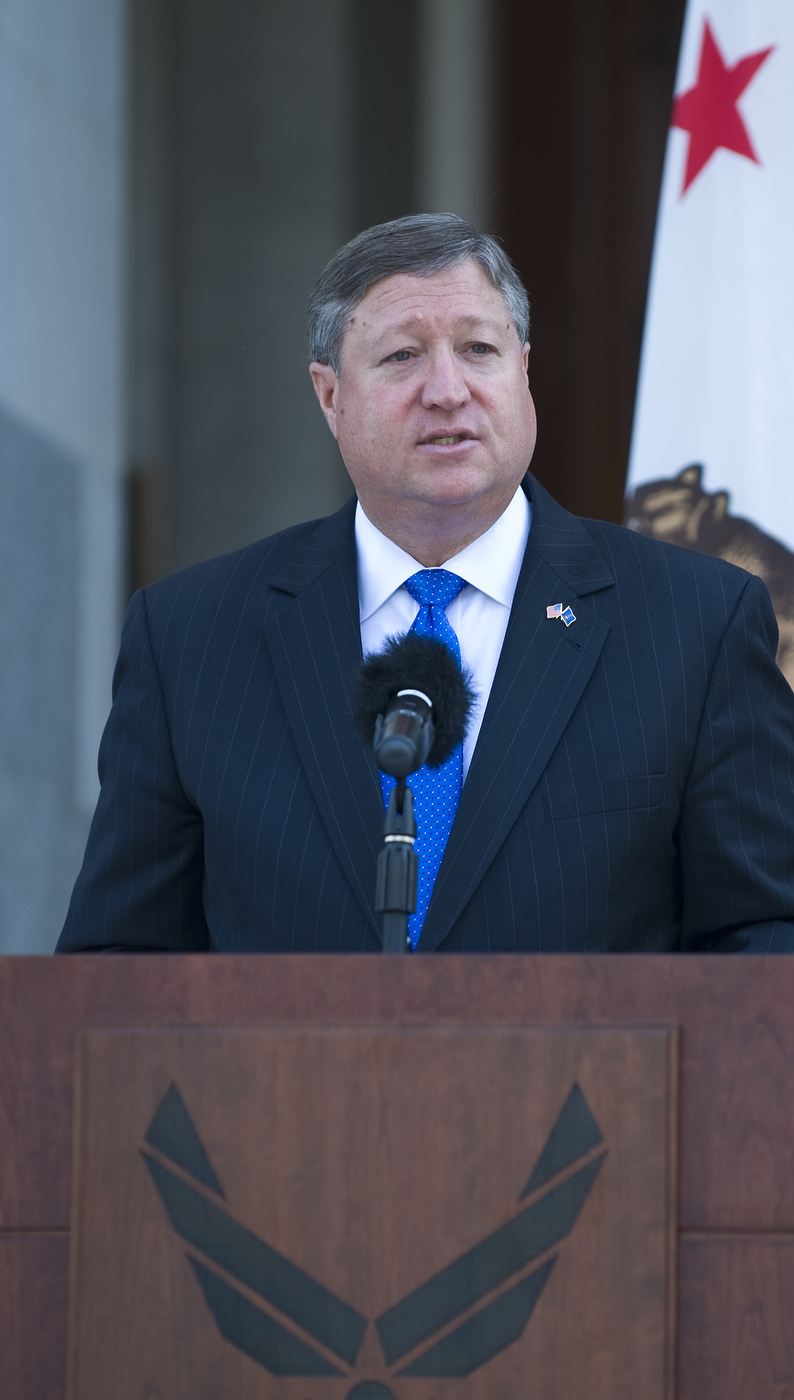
Air Force Week-Sacramento

Secretary of the Air Force, Michael Donley, speaks about the Air Force
presence in California during a proclamation ceremony on the California
State Capitol building's West steps naming Sept. 8 to 13 Air Force
Week-Sacramento, Sept. 8. The event featured a flyover by a C-17 Globemaster
III and a KC-10 Extender and performances by the Air Force Band of the
Golden West and the Air Force Drill Team. Air Force Week-Sacramento is an
event using various activities and exhibitions to educate the community
about the Air Force's capabilities and missions.